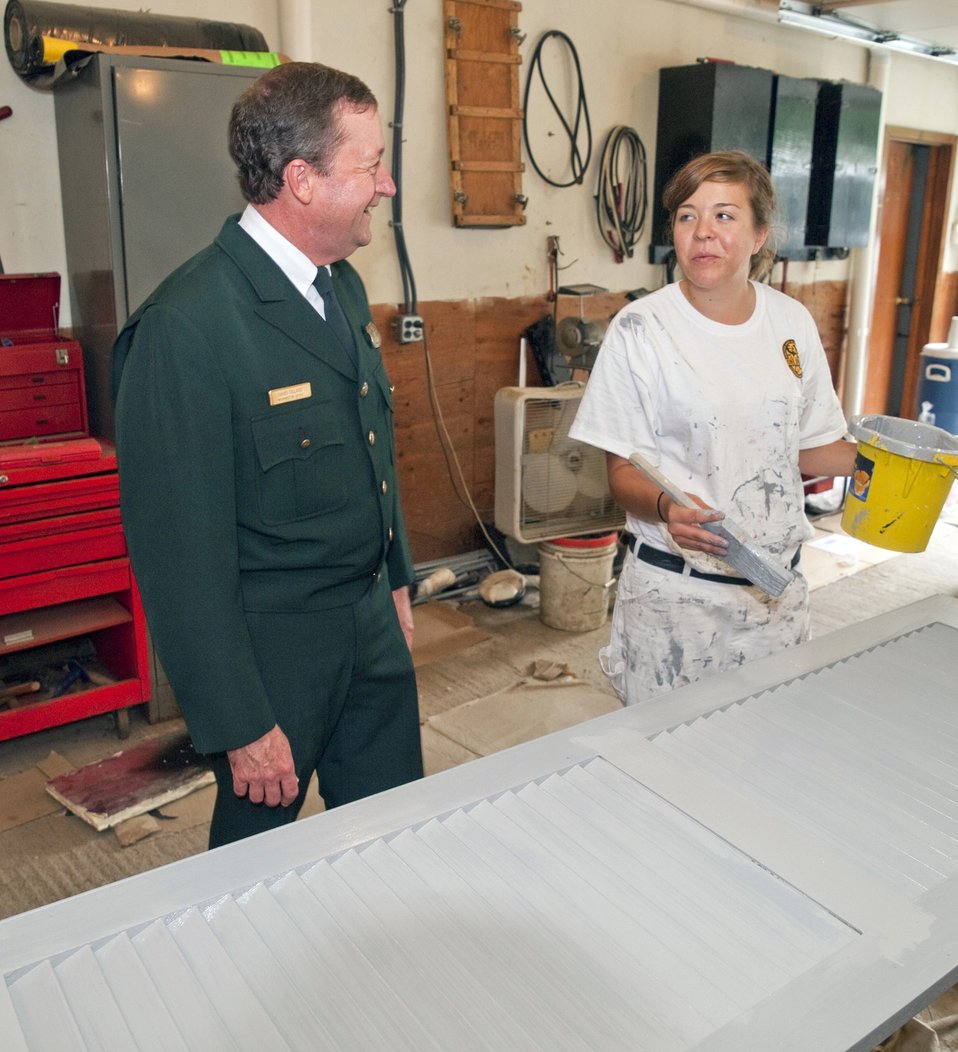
U.S. Forest Service Economic Recovery Executive David Dillard, looks over the progress of Job Corps students helping to restore Grey Towers National Historic Site. $2,440,000 in Recovery Act funds were allocated to repair and refurbish the house and grounds of the ancestral home of the first Chief of the Forest Service and two-term Pennsylvania governor Gifford Pinchot on Tuesday August 3, 2010 in Milford, PA. This project at the 123-year-old site repairs various deficiencies with the buildings and grounds, restores areas of the historic landscape, improves visitor safety and site security, provides a more sustainable facility, and enhances the visitor experience. It helps to ensure the historic site is maintained for years to come.